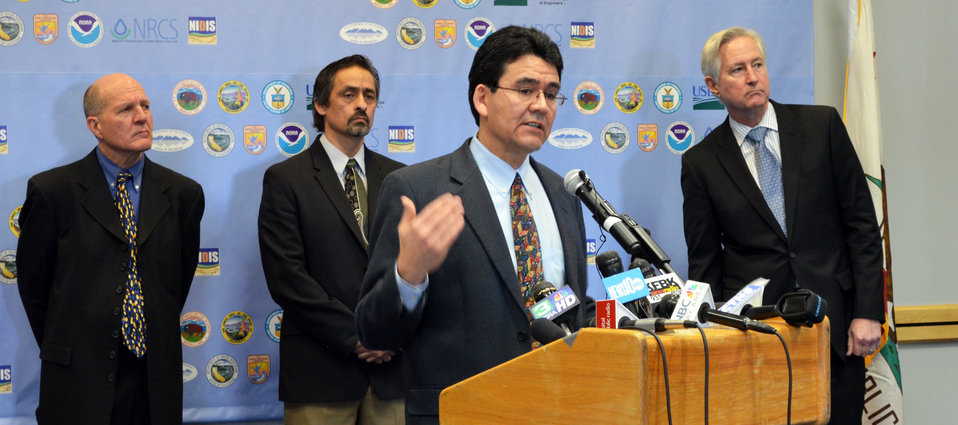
California drought press briefing, Feb. 5, 2014

Standing shoulder to shoulder, representatives of state and federal agencies speak at a Feb. 5 press event regarding their united effort to address California’s drought. From left to right are Ren Lohoefener, Pacific southwest regional director, U.S. Fish and Wildlife Service; David Murillo, mid-Pacific regional director, Bureau of Reclamation; Michael Connor, commissioner, Bureau of Reclamation (speaking); and Mark Cowin, director, California Department of Water Resources.